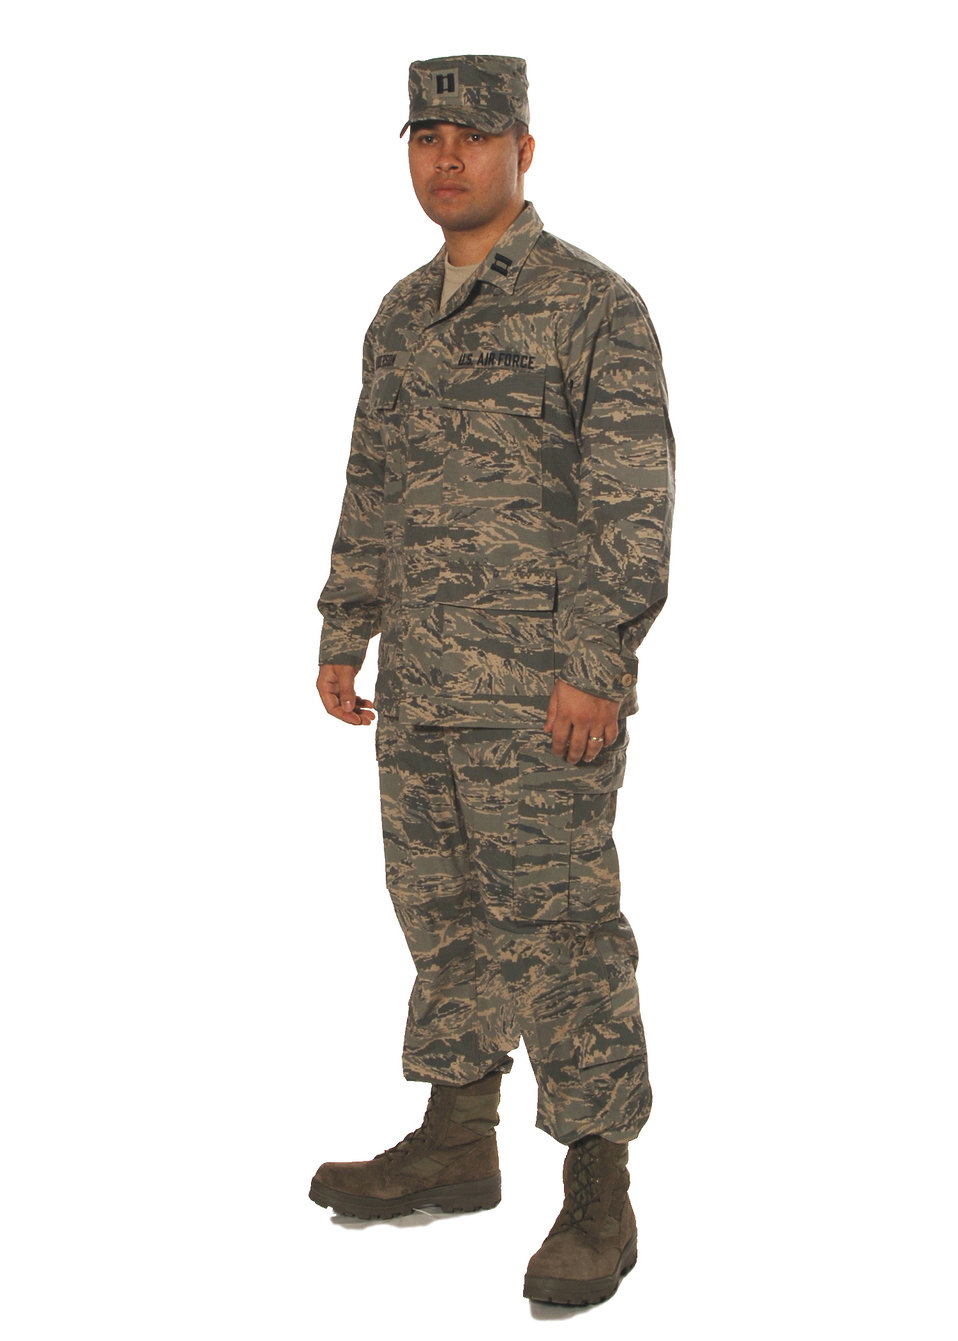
Airman Battle Uniform finalized

The new Airman Battle Uniform.